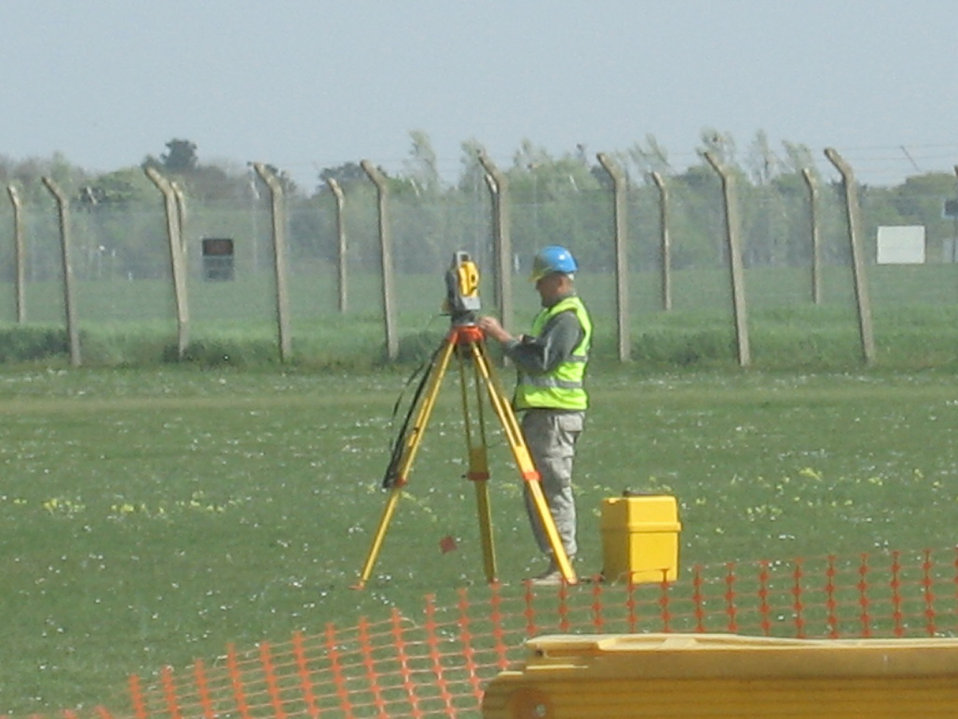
Civil engineers bring unique capability to USAFE

Staff Sgt. Brendan Allen sets up surveying equipment in July at Royal Air Force Feltwell, England. Sergeant Allen is an 86th Construction and Training Squadron Military Construction Flight engineering craftsman.